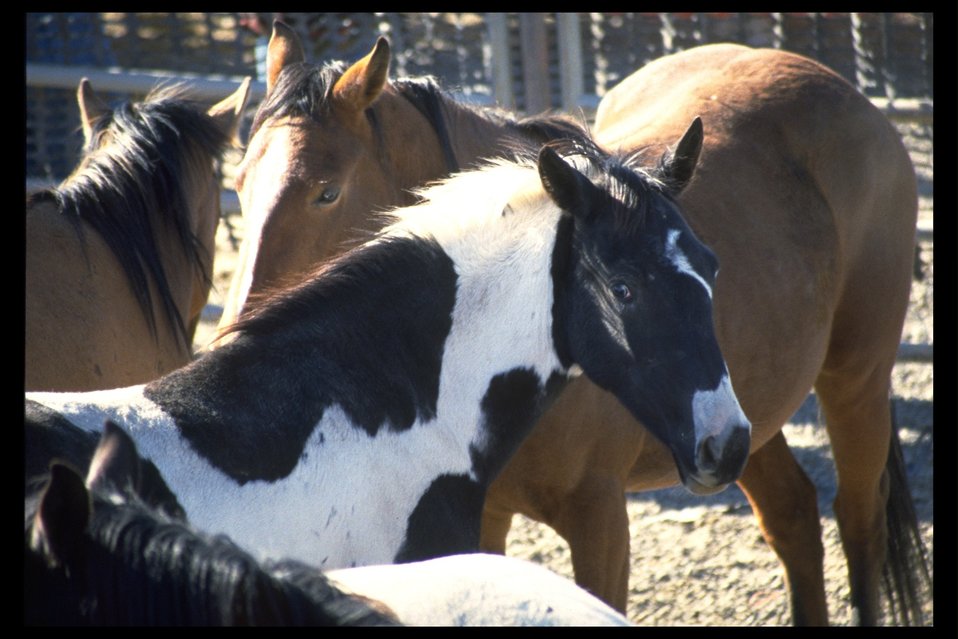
South Steens wild horses at a trap in the Burns District.